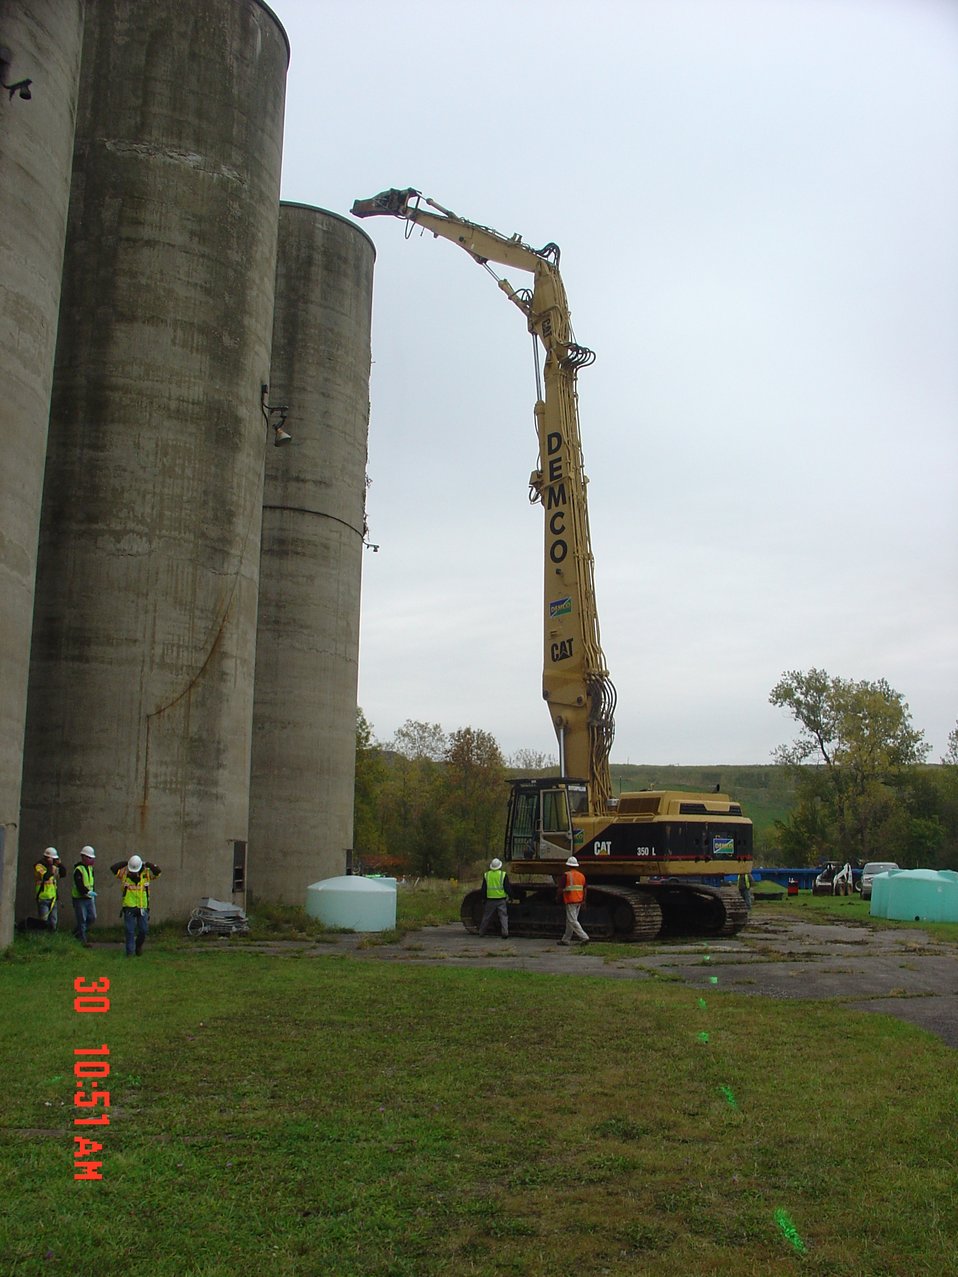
Building 401 silo demo begins.

Activities from the Niagara Falls Storage Site, which is associated with the former Lake Ontario Ordnance Works. Formerly Utilized Sites Remedial Action Program (FUSRAP), a program initiated in 1974 to identify, investigate and clean up or control sites that were part of the Nation's early atomic energy and weapons program. Activities at the sites that are eligible for FUSRAP were conducted by Manhattan Engineer District (MED) or the Atomic Energy Commission (AEC), both predecessors of the Department of Energy (DOE). The U.S. Army Corps of Engineers was assigned management of FUSRAP by Congress in 1997.